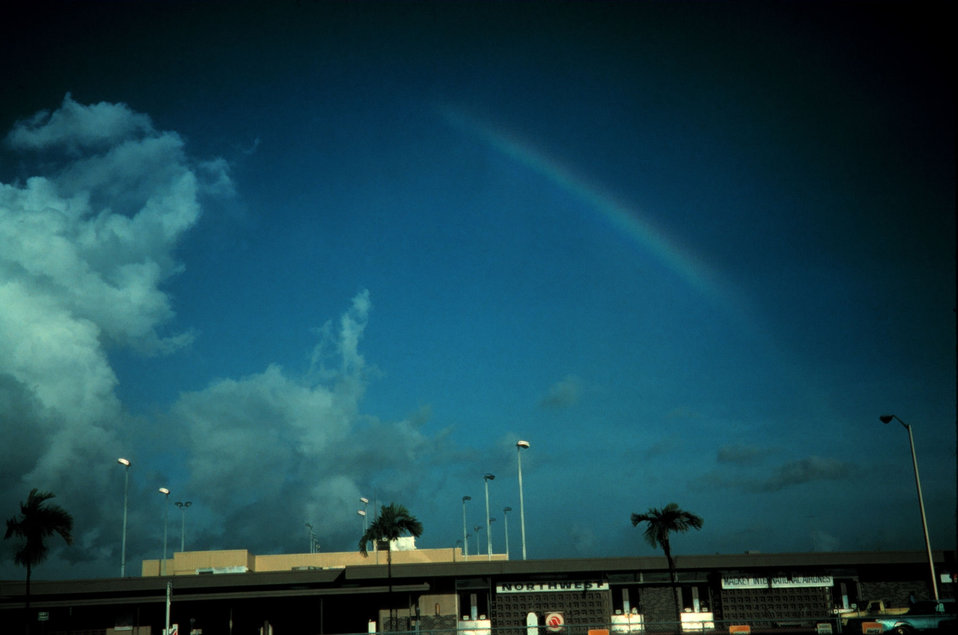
Double rainbow Note reversal of spectrum